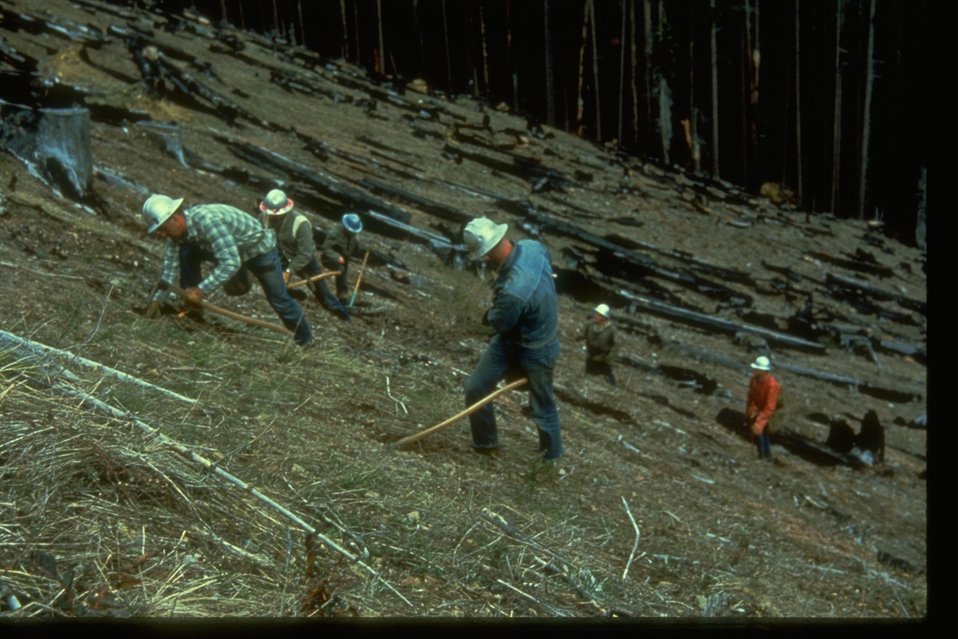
Field Workers plant trees.